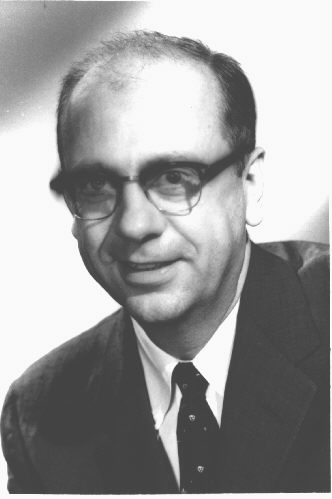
Theodore J. Bauer, M.D., CDC Chief, 1953 - 1956.